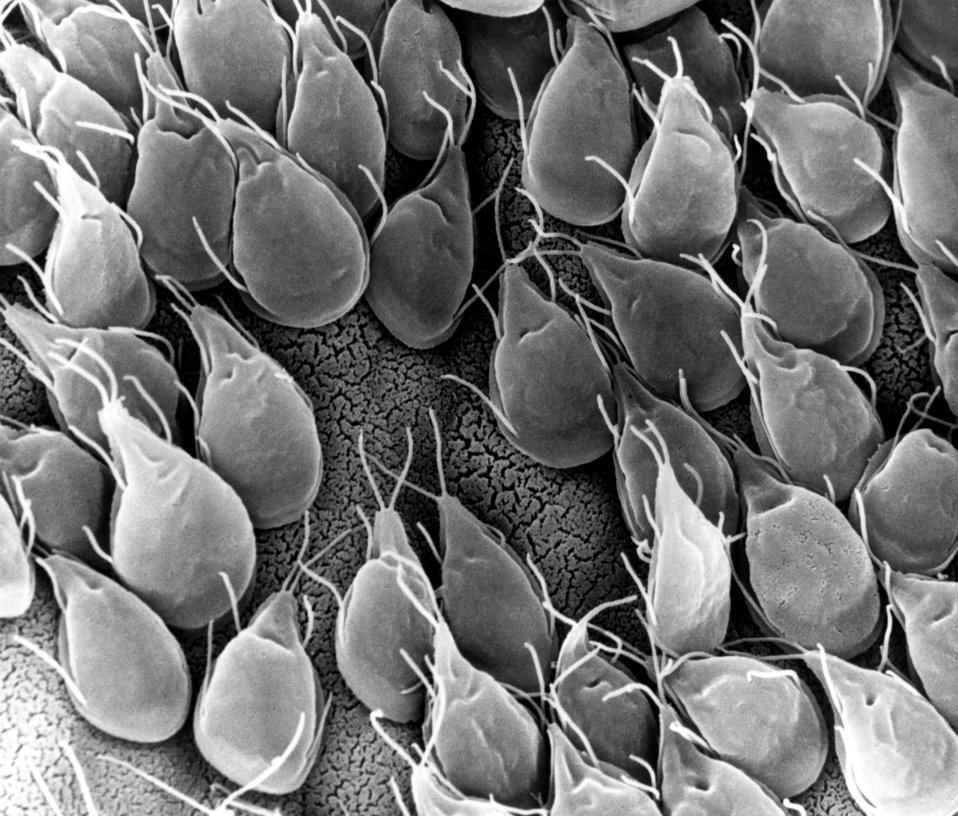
This scanning electron micrograph(SEM) depicted the mucosal surface of the small intestine of a gerbil infested with Giardia sp. protozoa. The intestinal epithelial surface is almost entirely obscured by the attached Giardia trophozoites.